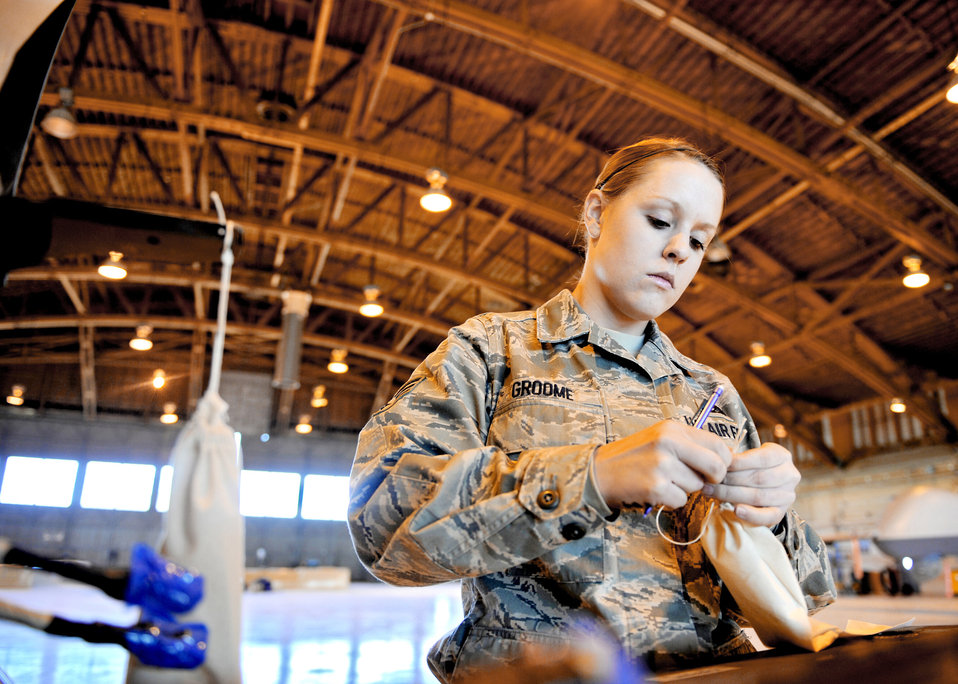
849th AMXS provides eyes in the sky of Haiti

Senior Airman Stephanie Groome puts hardware into a bag, labels it and assigns it to the correct wing to ensure the hardware isn't lost during transportation, Jan. 17, 2010, at Holloman Air Force Base, N.M. Airman Groome is a crew chief assigned to the 849th Aircraft Maintenance Squadron.